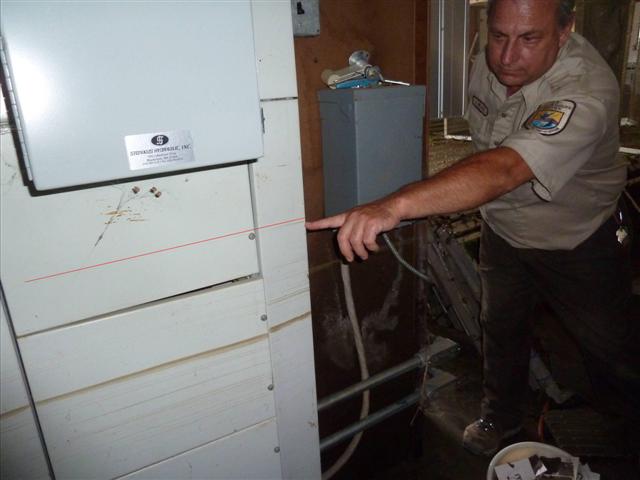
Damage at White River NFH - Bethel, VT

Wells Number 2 and 4 were damaged by the Hurricane